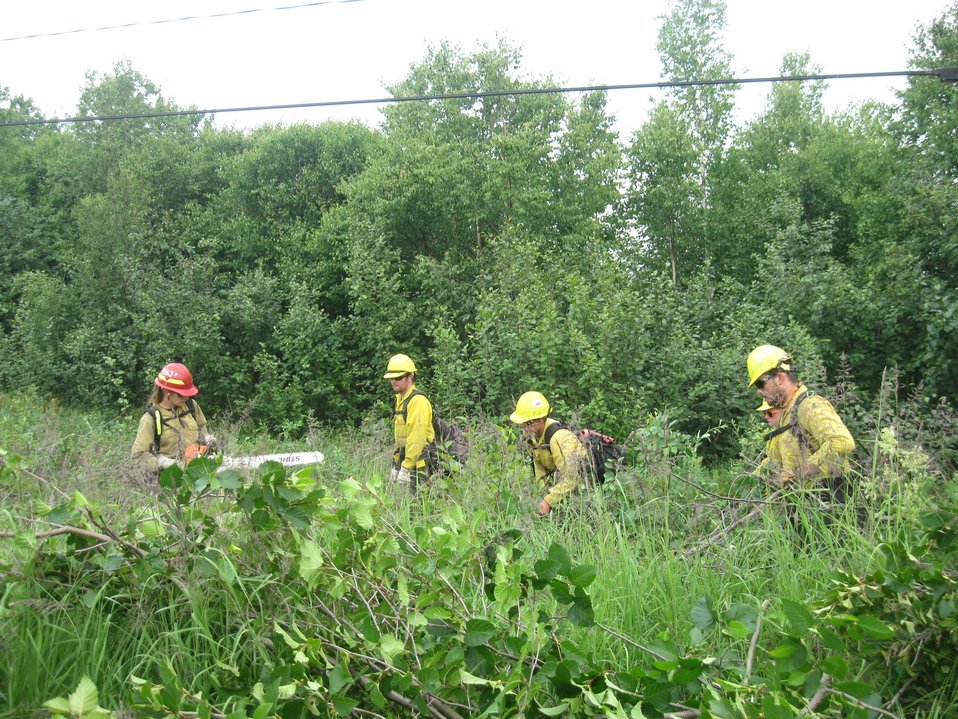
Fire crews clearing brush on Jul. 6, 2013 at the Stewart Creek Fire. The Stewart Creek Fire located 25 miles east of North Pole, AK began on Jun. 19, 2013 due to human causes and has consumed an estimated 85, 475 acres. The fire is approximately 71% contained.